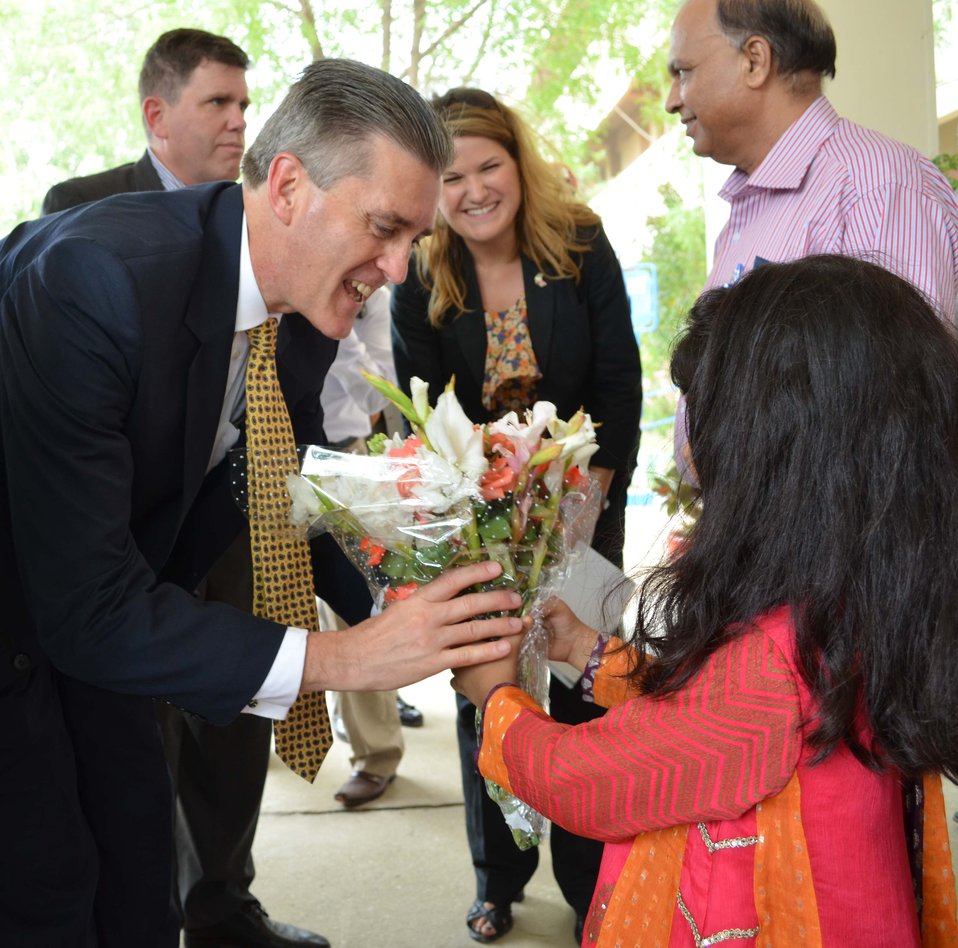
Ambassador Olson being presented a bouquet upon his arrival at the Jamshoro Thermal Power Station